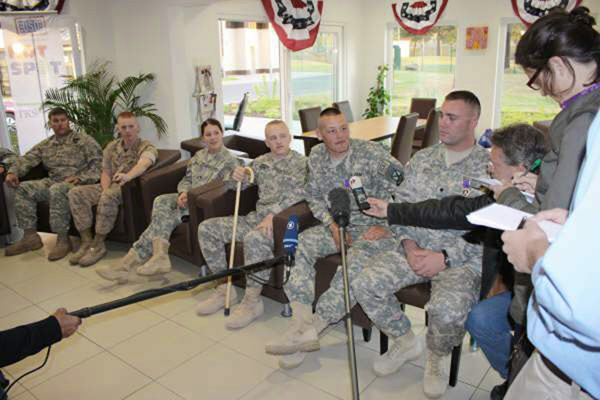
President Obama visits wounded warriors

Staff and patients at Landstuhl Regional Medical Center describe their experience of meeting President Barack Obama with members of the media June 5 in the USO Warrior Center in Landstuhl, Germany.